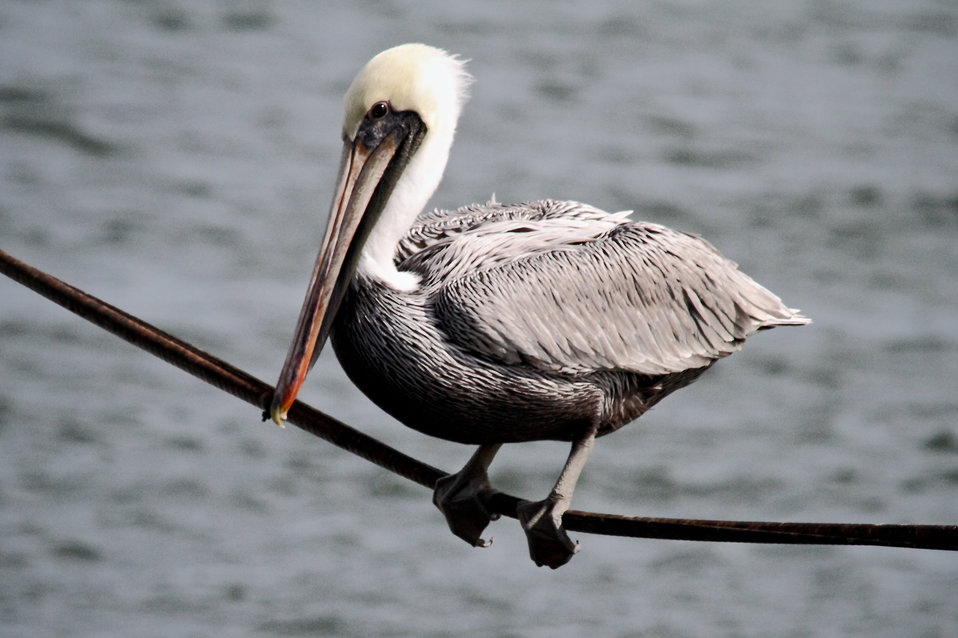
Brown Pelican perched on a overhead wire